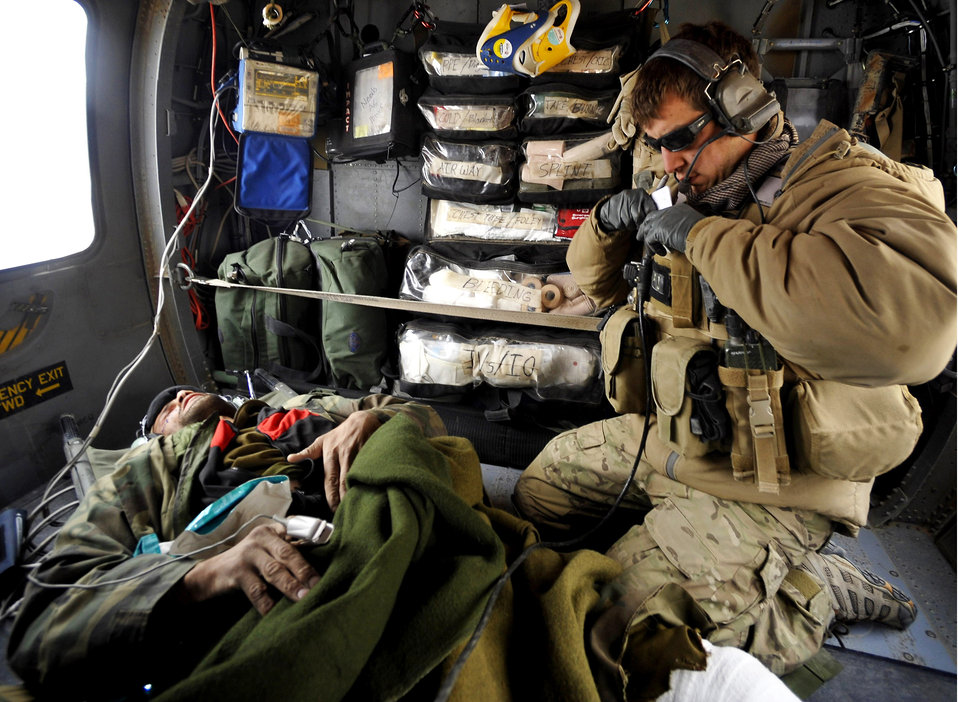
Pararescueman provides medical attention to an Afghan who has suffered gunshot injuries

A U.S. Air Force Pararescueman from the 66th Expeditionary Rescue Squadron deployed to Camp Bastion, Afghanistan, provides medical attention to an Afghan who has suffered gunshot injuries, Dec. 8, 2009. The PJs are able to rescue patients in any situation who need medical attention.